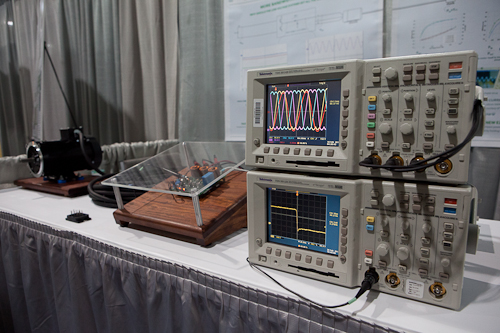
Transphorm

If successful, Transphorm’s transistors would improve the energy efficiency of electric motor drives by 2-8%.